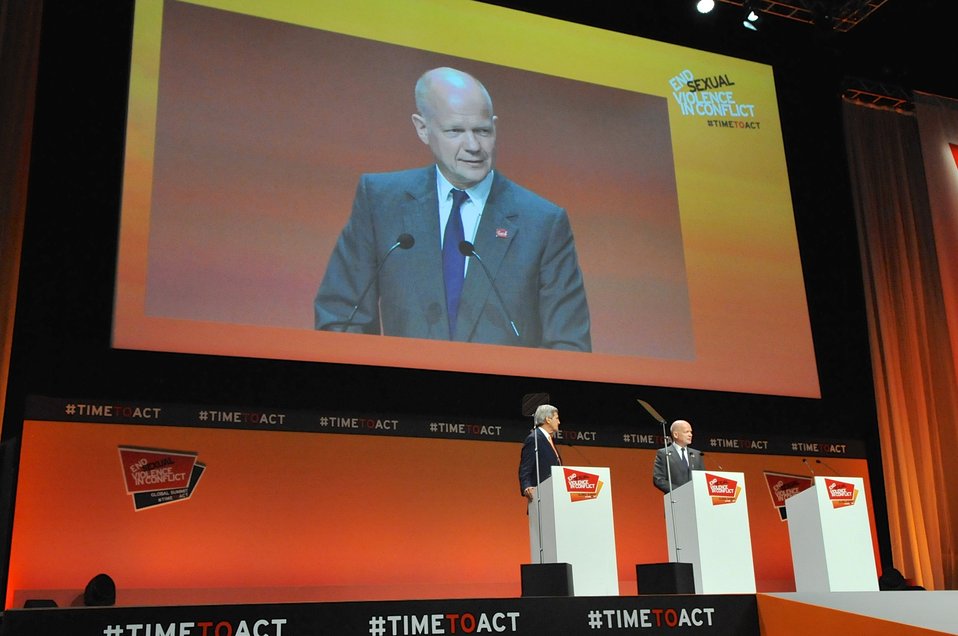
British Foreign Secretary Hague Welcomes Secretary Kerry to 2014 Global Summit to End Sexual Violence in Conflict

British Foreign Secretary William Hague introduces U.S. Secretary of State John Kerry before he delivers the keynote address to an audience including actors Angelina Jolie and Brad Pitt at the 2014 Global Summit to End Sexual Violence in Conflict in London, UK, on June 13, 2014.